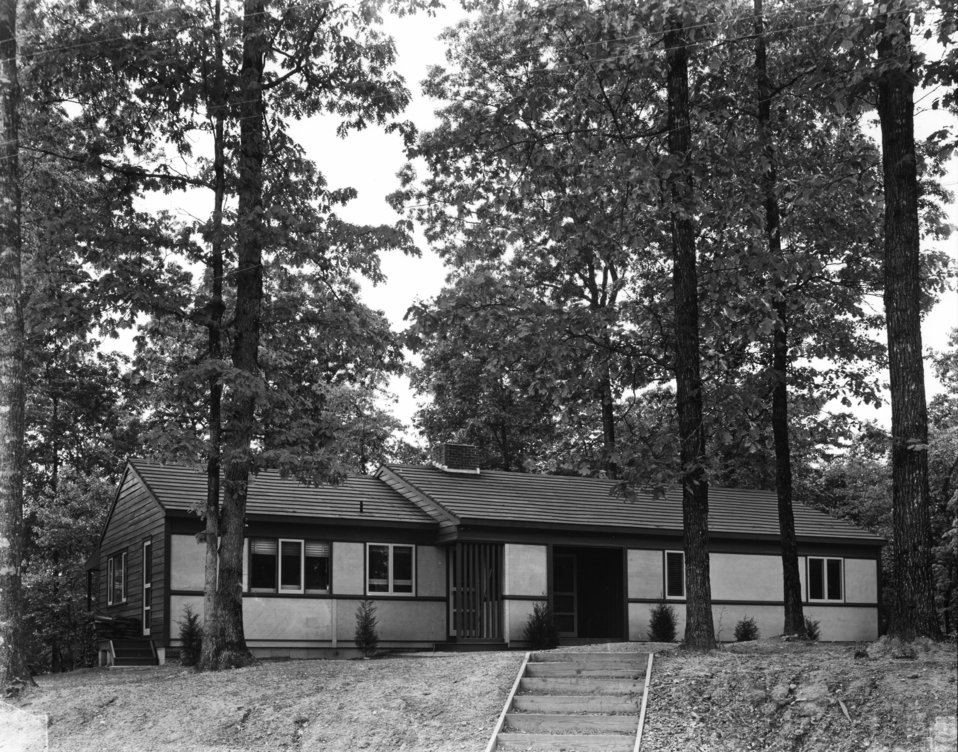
Housing at Oak Ridge